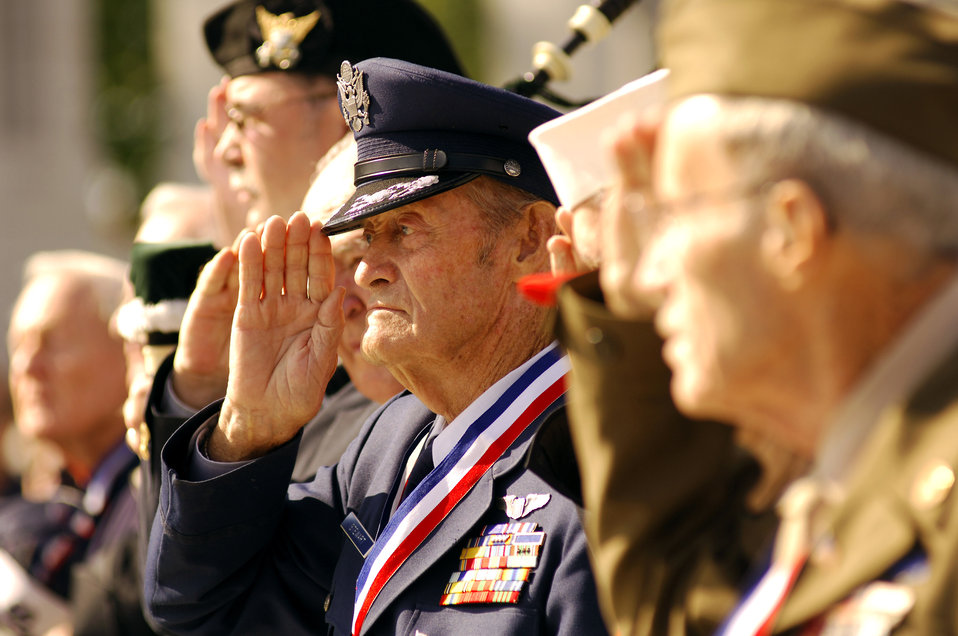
Hero Flight transports 122 WW II veterans in 2007

Retired Col. Walt Stewart stands and salutes the colors with fellow World War II veterans during a ceremony for Hero Flight 2007 at the National World War II Memorial in Washington, D.C., Sept. 15. Hero Flight is an all-volunteer program that sets up trips to allow as many World War II veterans as possible to visit the National World War II Memorial.